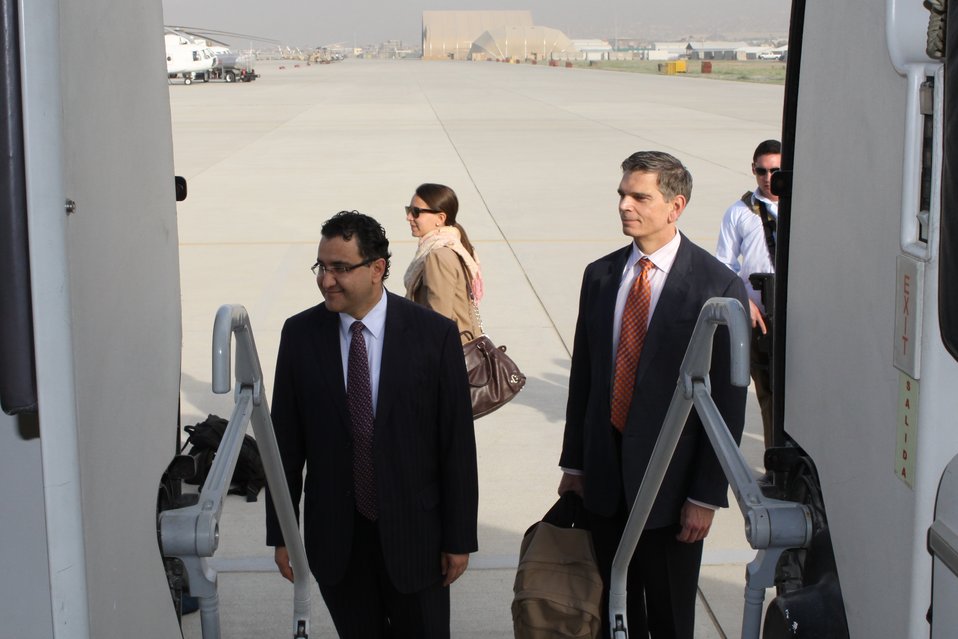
100525 Hirat Marble Conference 006